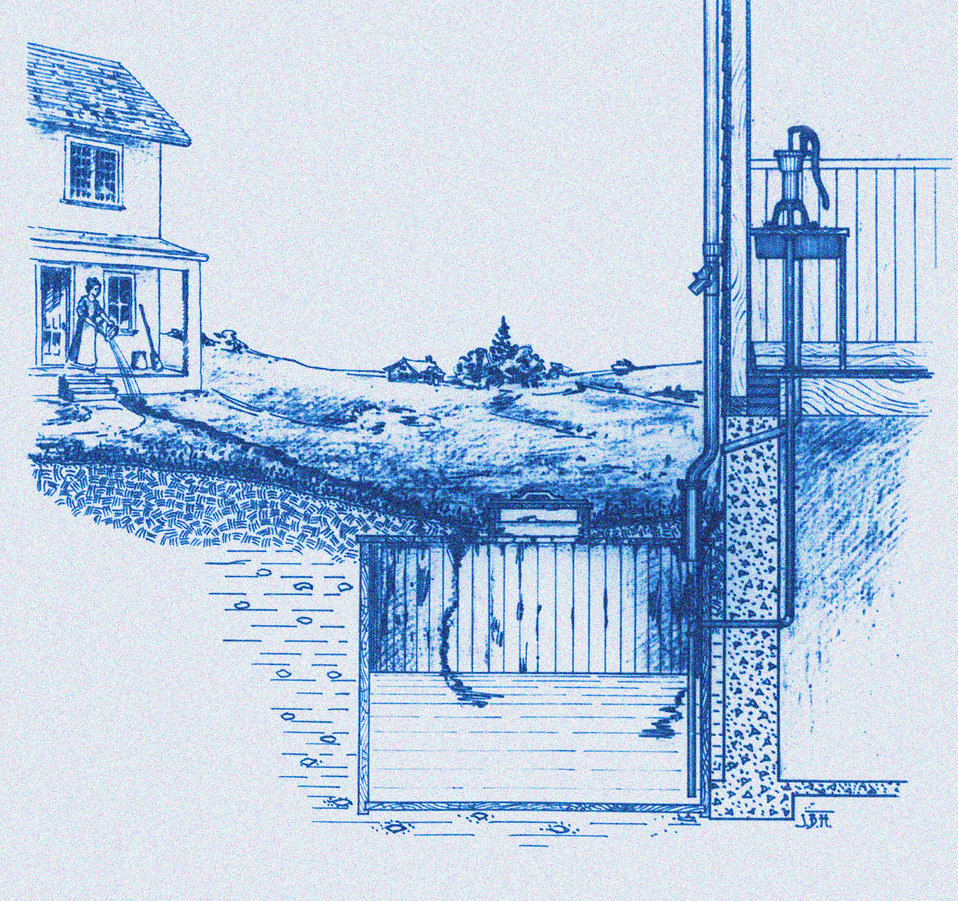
This historic diagram, which had been digitally enhanced and colorized, depicted a poorly constructed cistern outside a farmhouse illustrating the various ways the water supply could become contaminated. Published in 1915, this was one of a series of instructional drawings used by the Minnesota Board of Health to train the state's public health workers. Note the contaminating drainage emanating from the home as a woman emptied waste water from the front porch, and waste water that was draining into the cistern from a porch-situated water pump on the right.